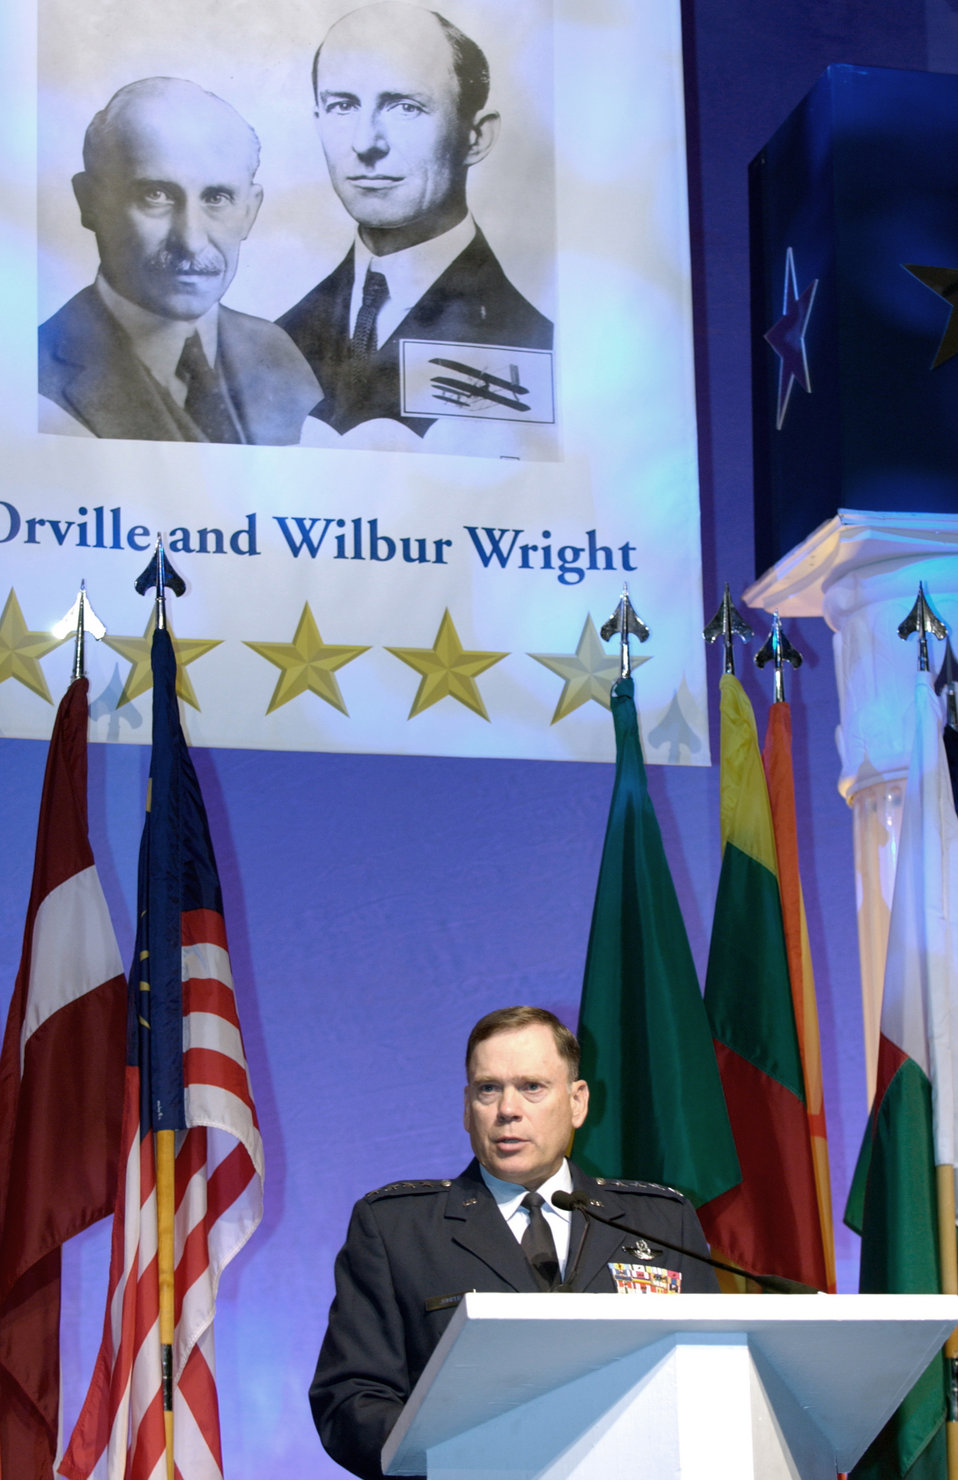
AFA Convention

WASHINGTON -- The Air Force chief of staff, Gen. John P. Jumper, gives his remarks during the opening ceremony of the Air Force Association's annual convention in Washington, D.C., on Sept. 15. In the audience were more than 90 international air chiefs who are attending the Global Air Chief's Conference which is running in conjunction with the convention.